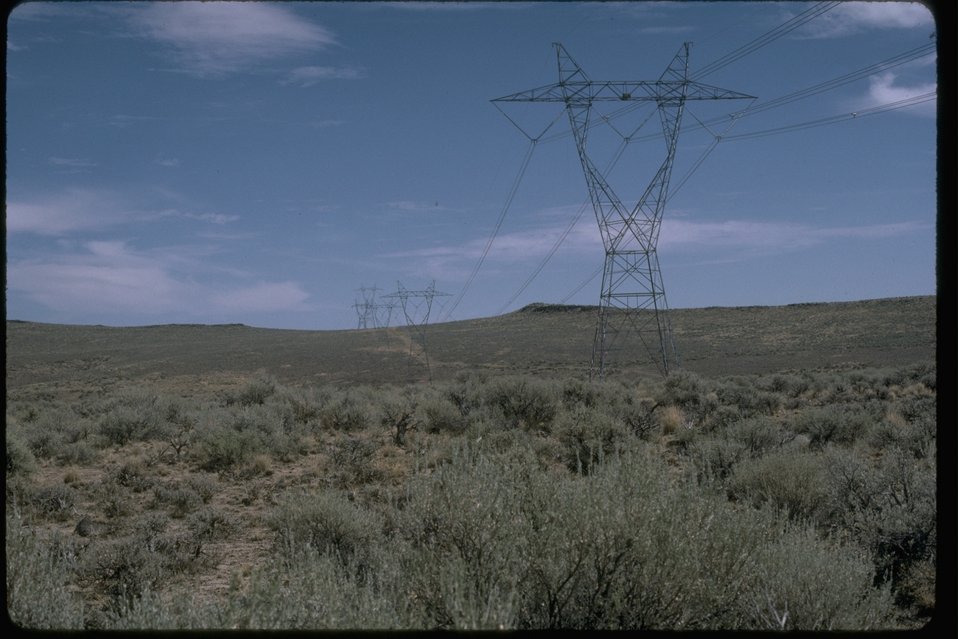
Power ines right-of-way in the Cottonwood Creek Wilderness Study Area. OR 3-32